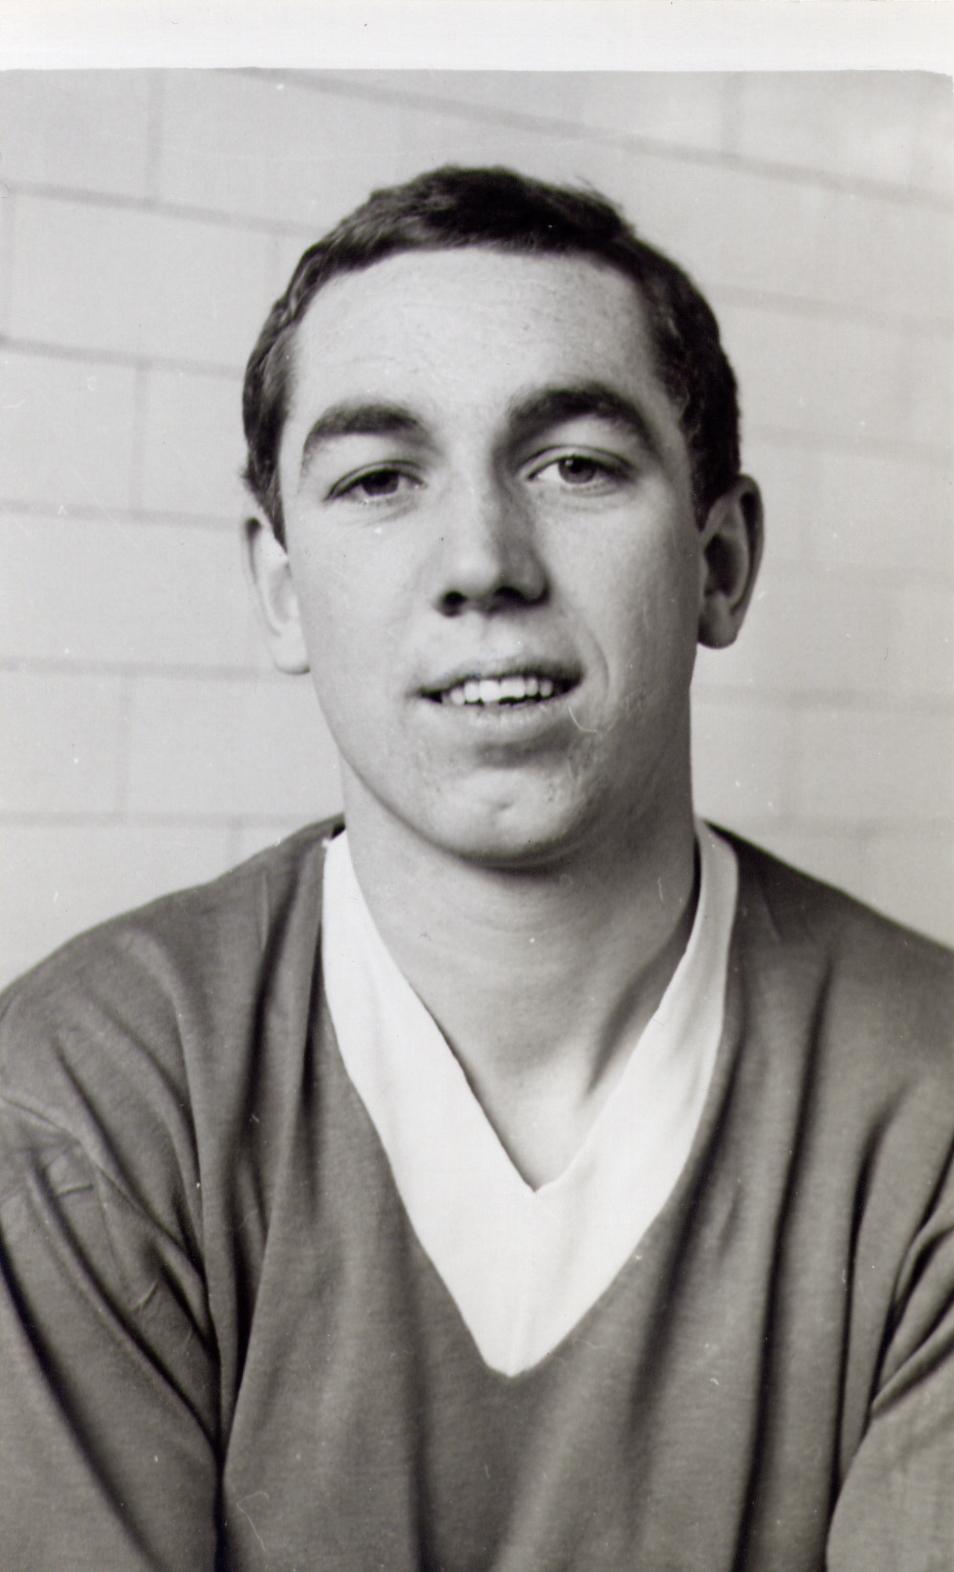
family photo